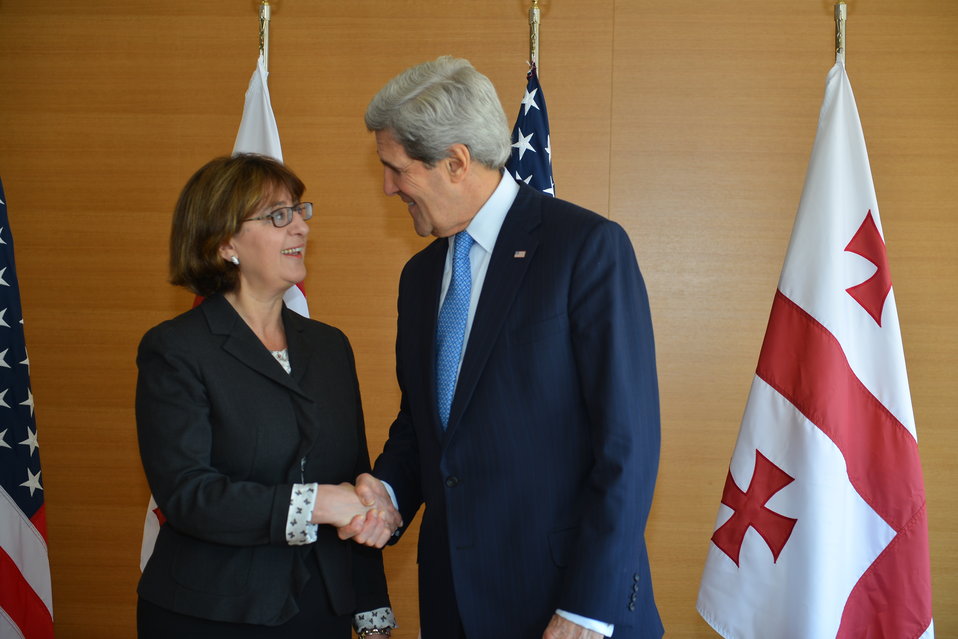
Secretary Kerry Meets With Georgian Foreign Minister Panjikidze

U.S. Secretary of State John Kerry meets with Georgian Foreign Minister Maia Panjikidze in Brussels, Belgium, on April 24, 2013.